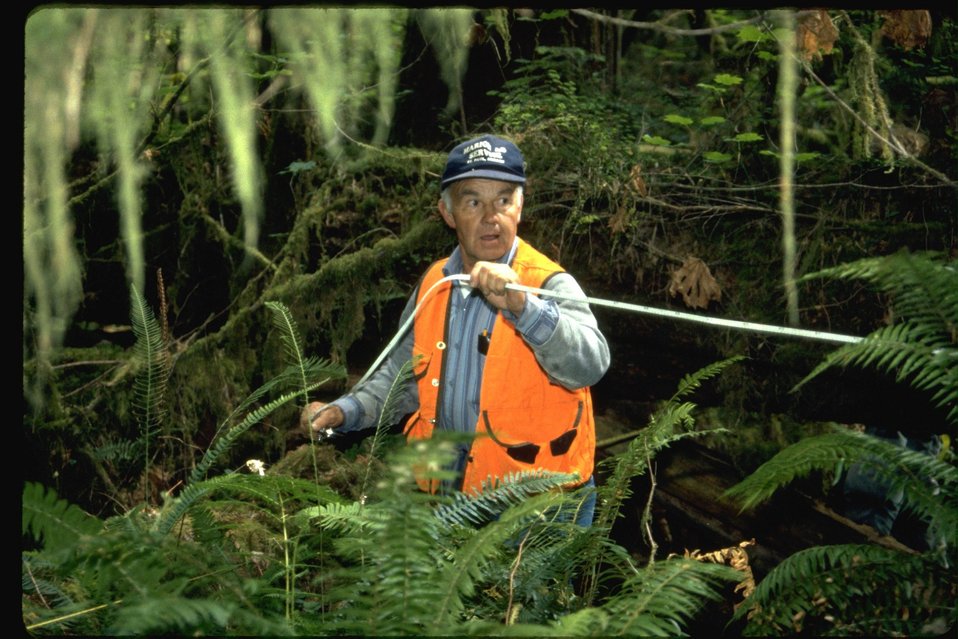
Ted conducting timber volume measurements.